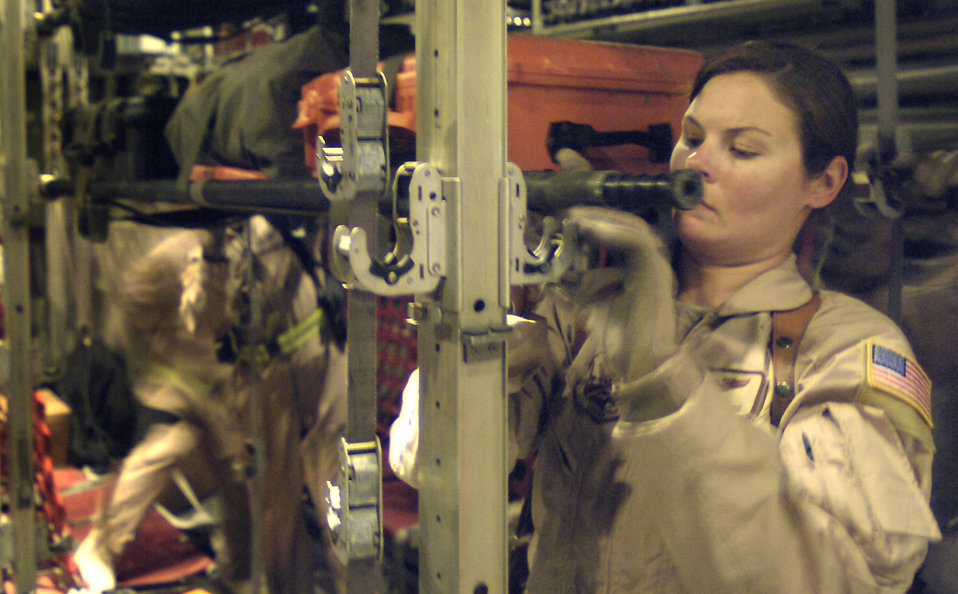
Medical care in the air

Staff Sgt. Jody Gragg locks down a litter of medical equipment aboard a C-130 Hercules as she helps reconfigure the aircraft for an aeromedical evacuation mission from Bagram Air Base, Afghanistan, on Thursday, June 8. Sergeant Gragg is assigned to the 455th Expeditionary Aeromedical Evacuation Flight. She is deployed from the 43rd Aeromedical Evacuation Squadron at Pope Air Force Base, N.C.